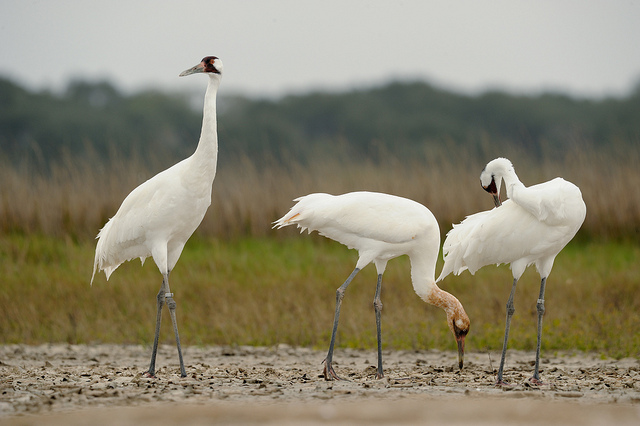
whooping crane family on wintering grounds

Aransas National Wildlife Refuge